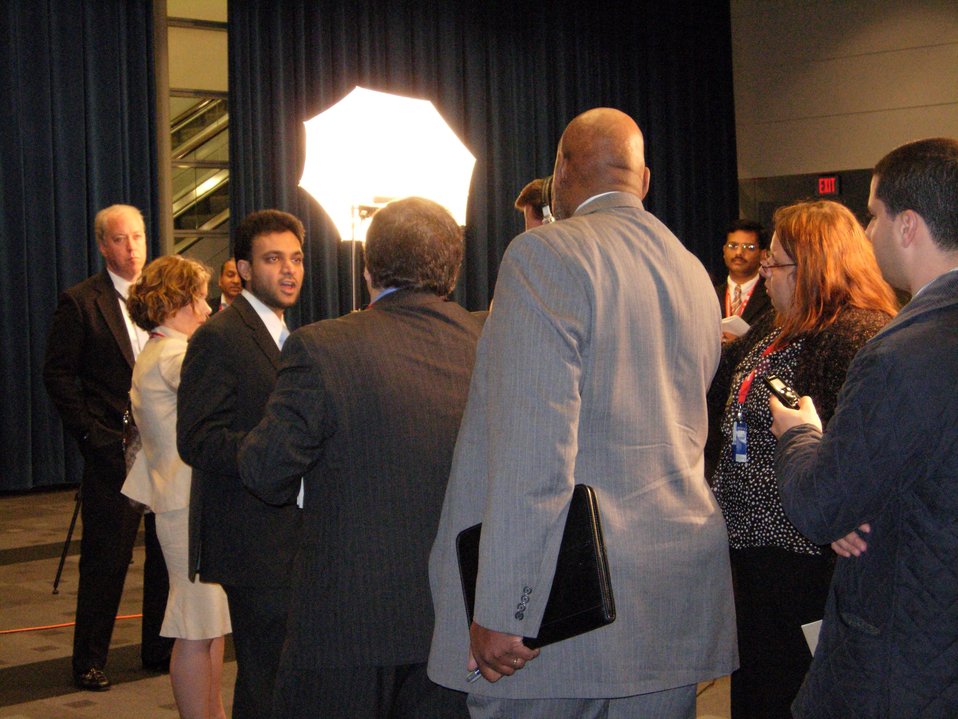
Special Envoy Hussein Takes Questions

Special Envoy to the Organization of the Islamic Conference Rashad Hussain takes questions at the Presidential Summit on Entrepreneurship, Washington, D.C., April 27, 2010.